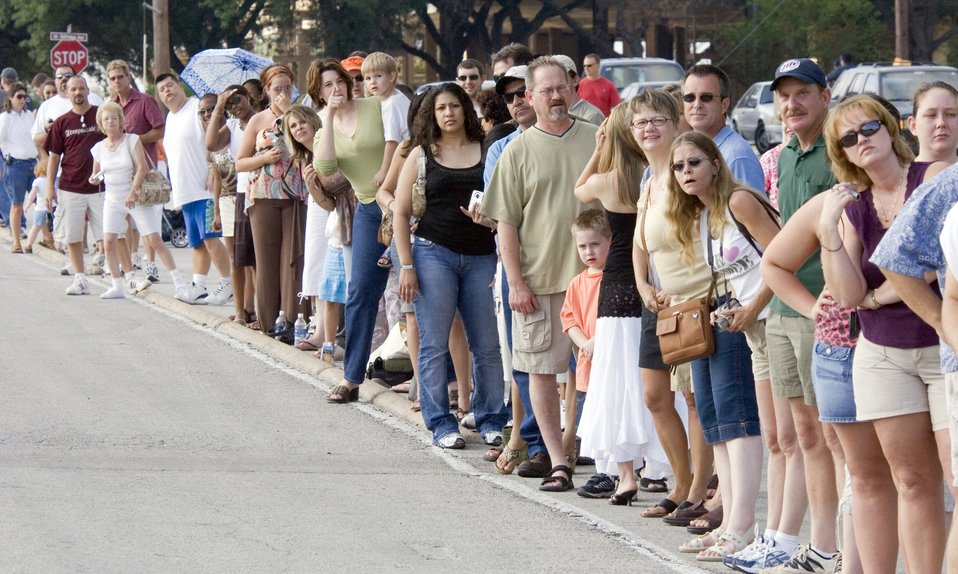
Airmen's Run

Friends and family members of those completing Air Force Basic Military Training anxiously wait in anticipation of seeing the Airmen during the 2.5-mile Airmen's run Thursday, June 29. The run is a victory celebration of the challenges overcome and esprit de corps gained by Airmen during training.